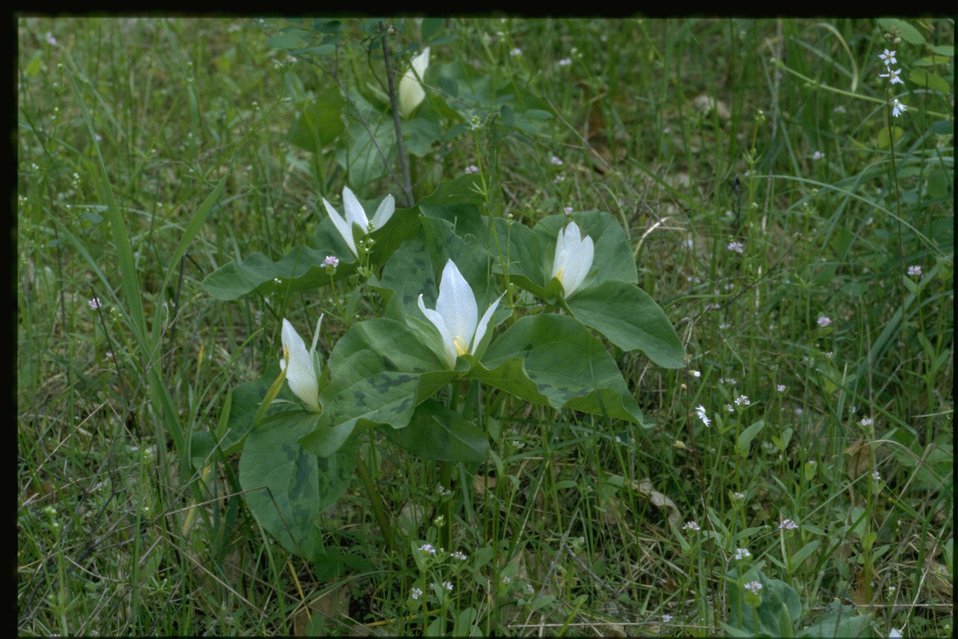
Medium shot of Trillium albidum.